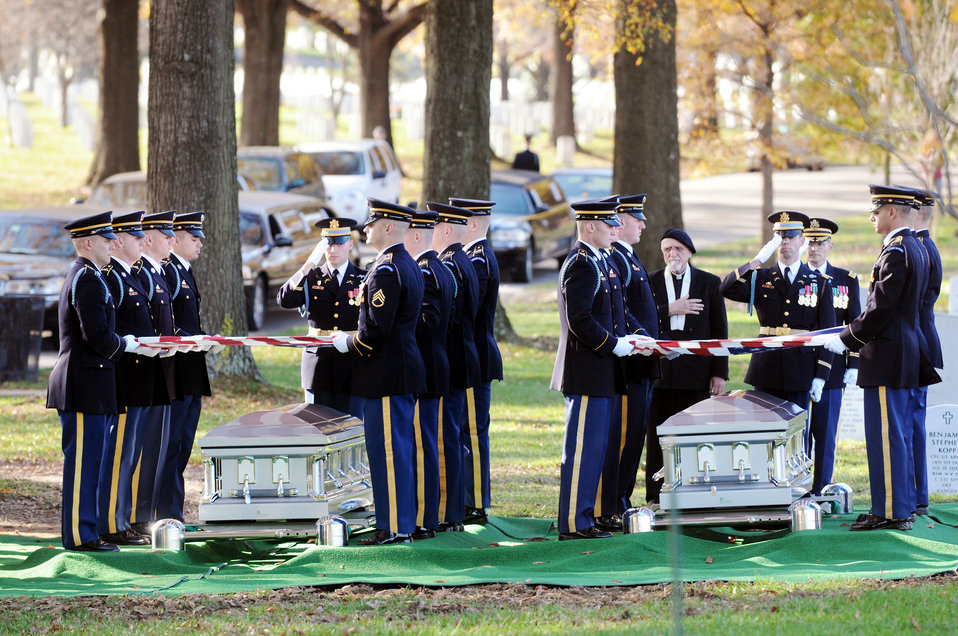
Airmen honor the fallen

Two military members render a salute as the honor guard prepare the flags to present to family members Nov. 17, 2009, at Arlington National Cemetery, Va.